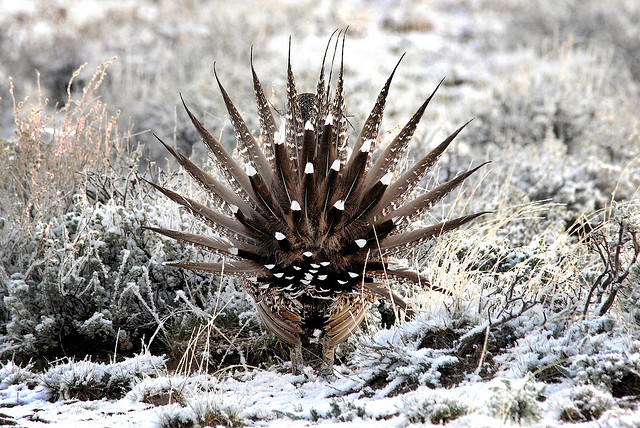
greater sage grouse

Malheur National Wildlife Refuge